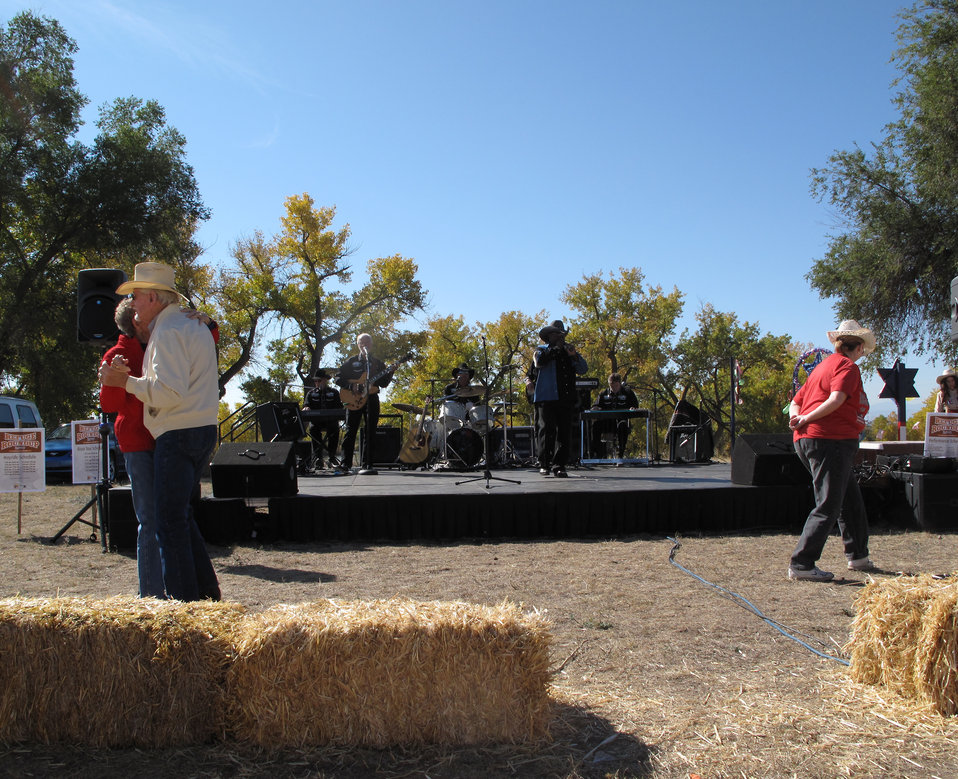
Refuge Round-up 2010

Rudy Grant and the Buffalo Riders perform at the Refuge Round-Up.